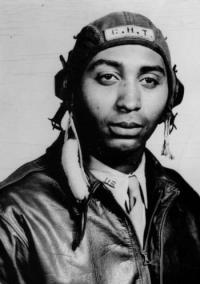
Lt. Oliver Goodall, a Tuskegee Airman, helped end segregation in military